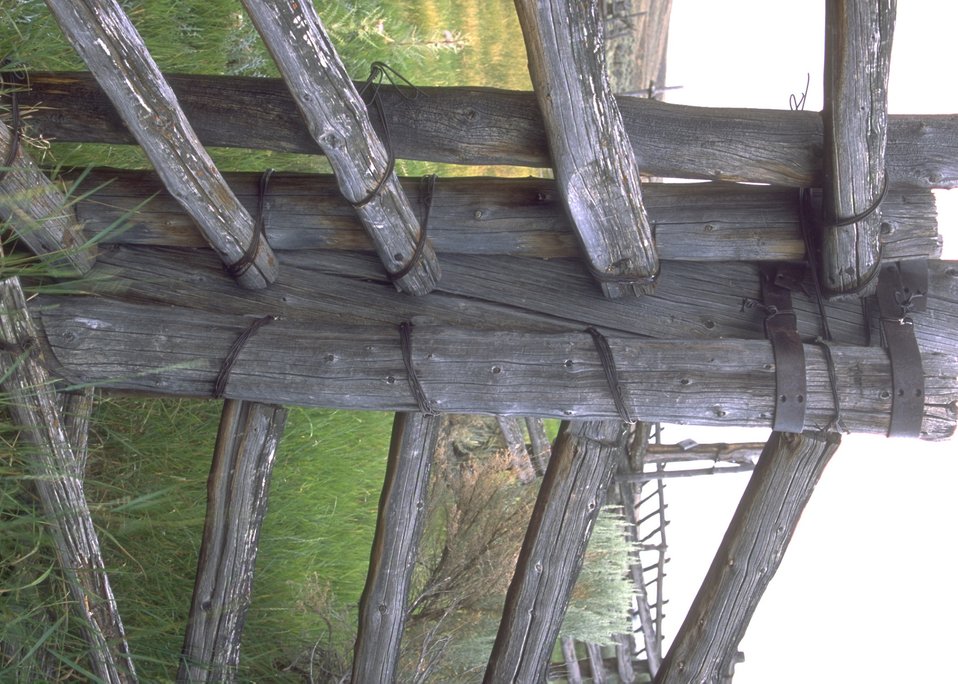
Historic Crookston Ranch near OHV Sand Dunes Area, Rock Springs Field Office